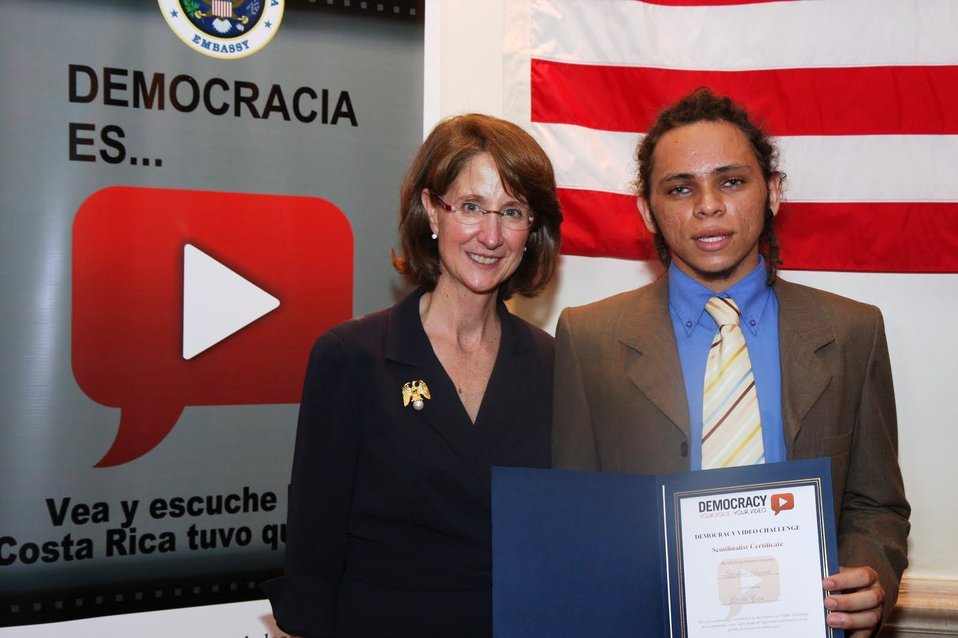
Ambassador Andrew Gives a Certificate to a Democracy Video Challenge Participant

U.S. Ambassador to Costa Rica Anne Slaughter Andrew gives a certificate of appreciation to a participant in the 2009 and 2010 Democracy Video Challenge during the U.S. Embassy San Jose in Costa Rica’s U.S. Independence Day celebration on July 2, 2010, at the Hotel Intercontinental in Escazu, Costa Rica.